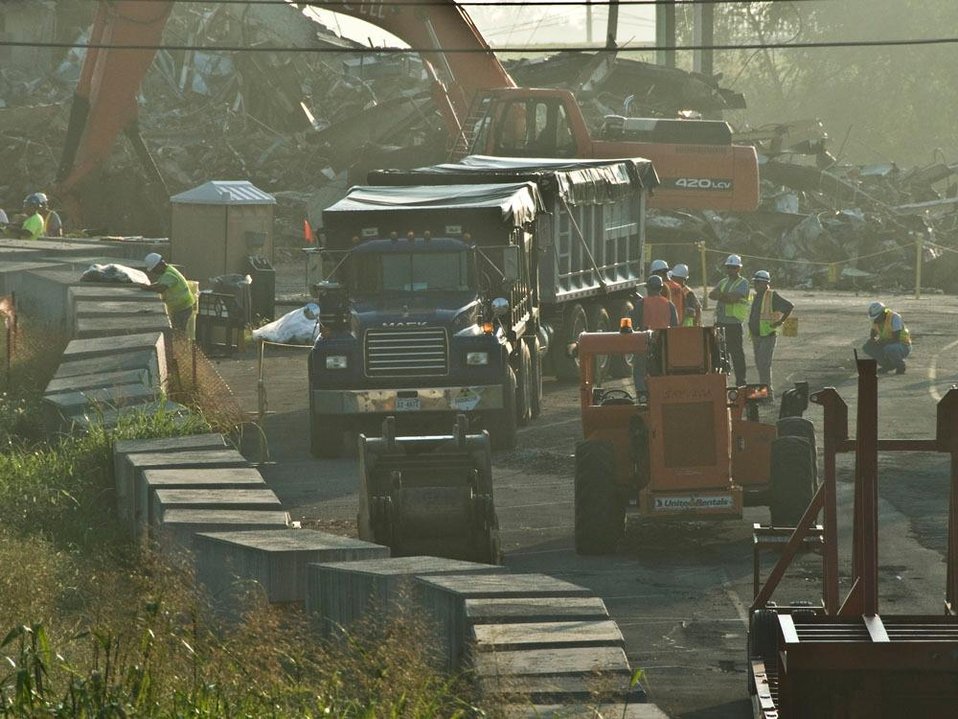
Oak Ridge cleanup work

Recovery Act funds are helping Oak Ridge complete substantial cleanup work at Y-12 National Security Complex, including the demolition of five Cold War facilities and cleanup of a 7-acre scrap yard.